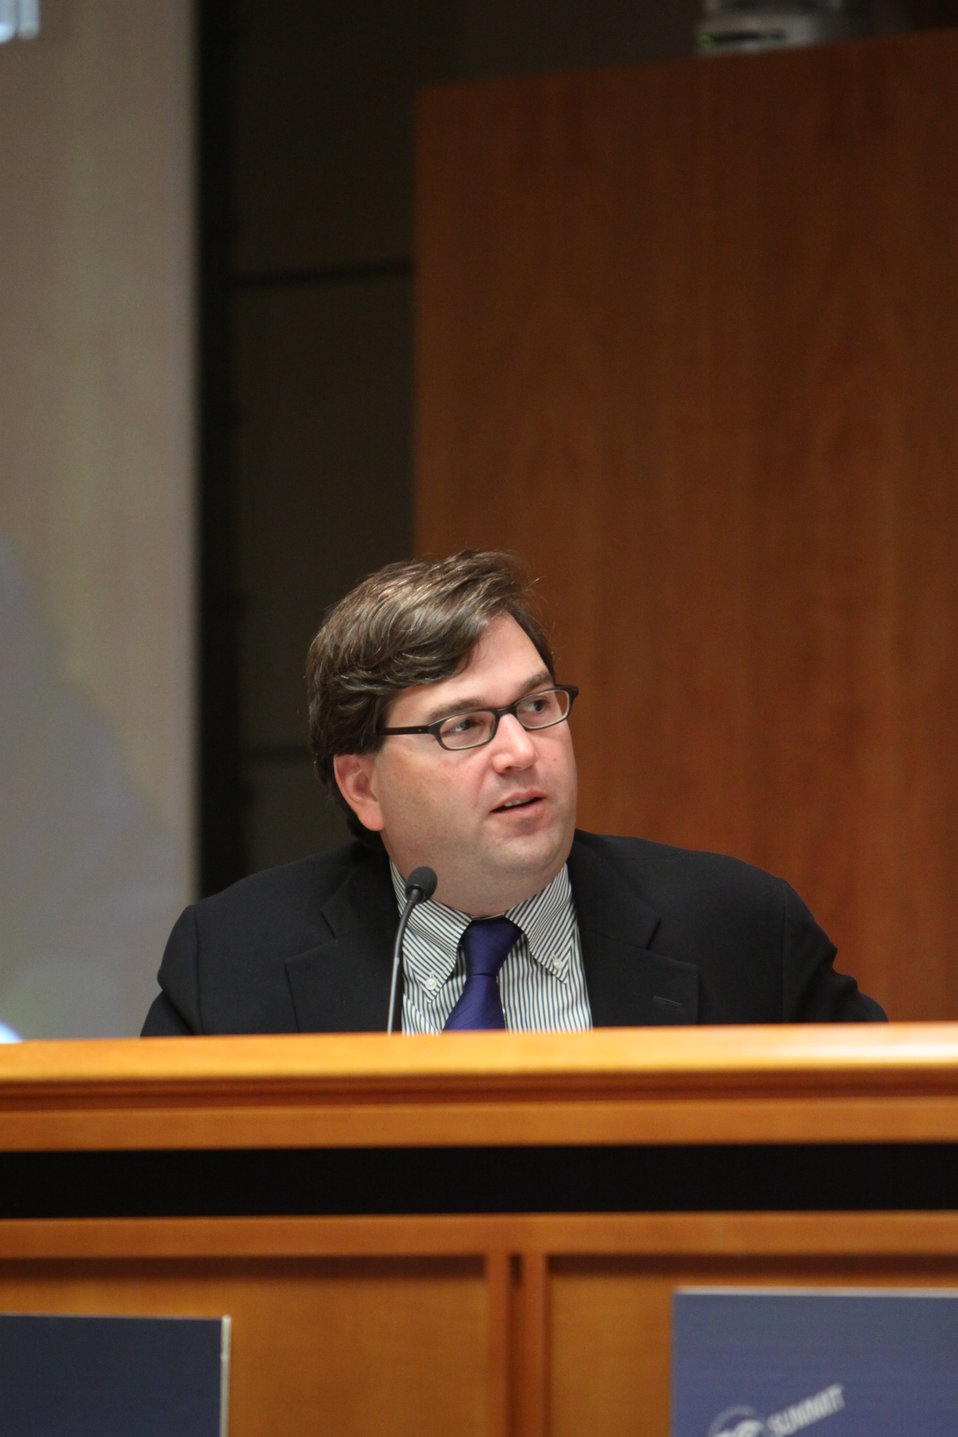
Moderator Jason Furman, Deputy Director, National Economic Council

Economic Imperative for New Broadband Spectrum Panel